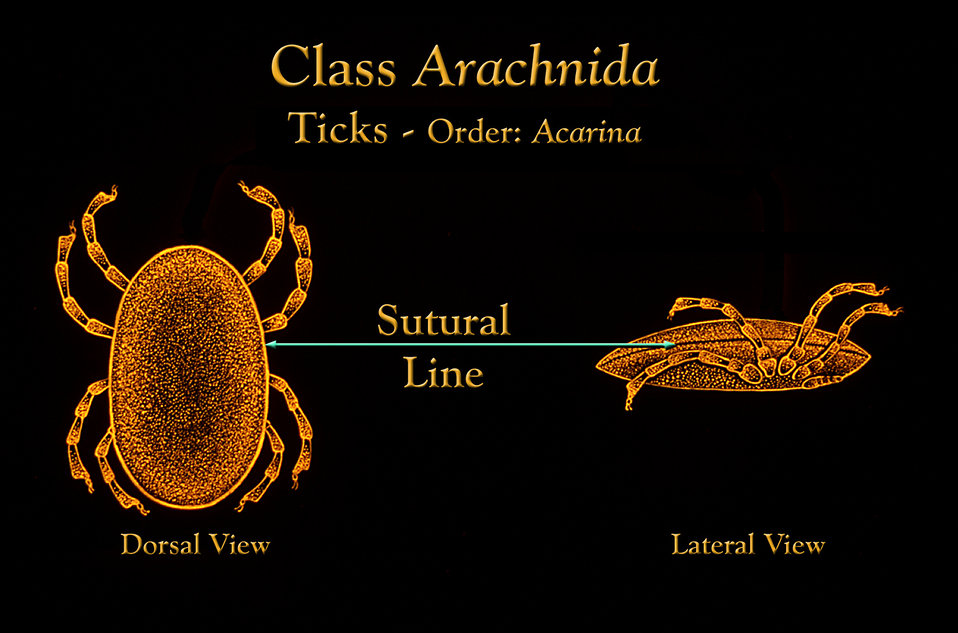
This drawing depicts the anatomic location of the 'sutural line' located circumferentially along the outer abdominal margin.